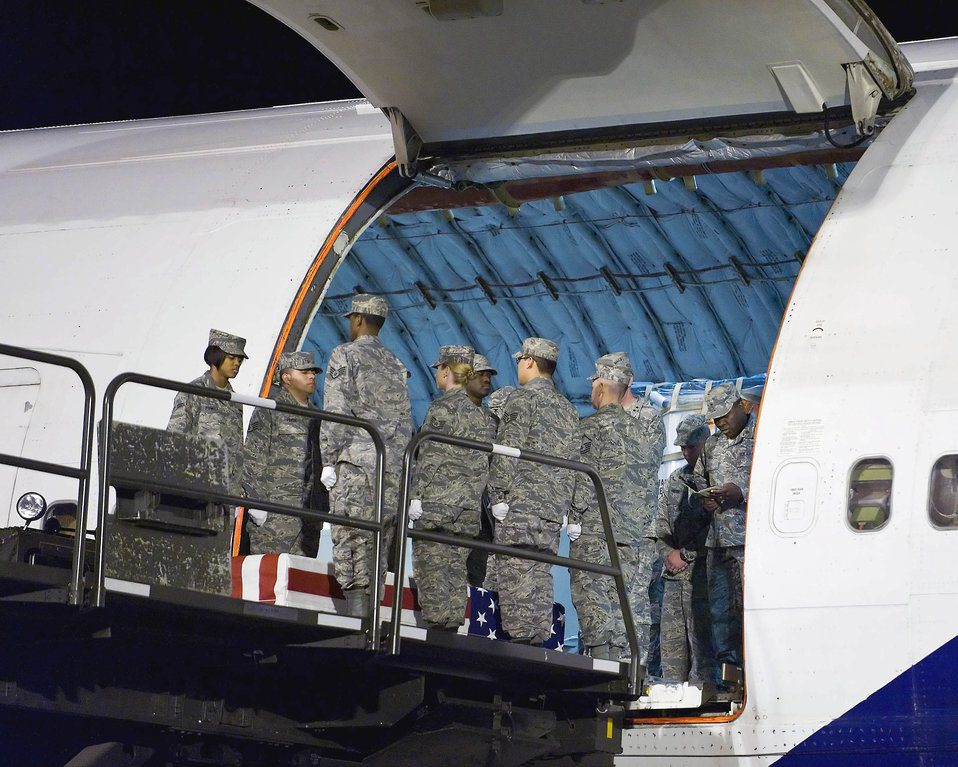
The life of a port mortuary chaplain

Chaplain (Maj.) Klavens Noel (far right) prays over remains on an aircraft at Dover Air Force Base, Del. Chaplain Noel is a port mortuary chaplain at the Air Force Mortuary Affairs Operations Center at Dover AFB.